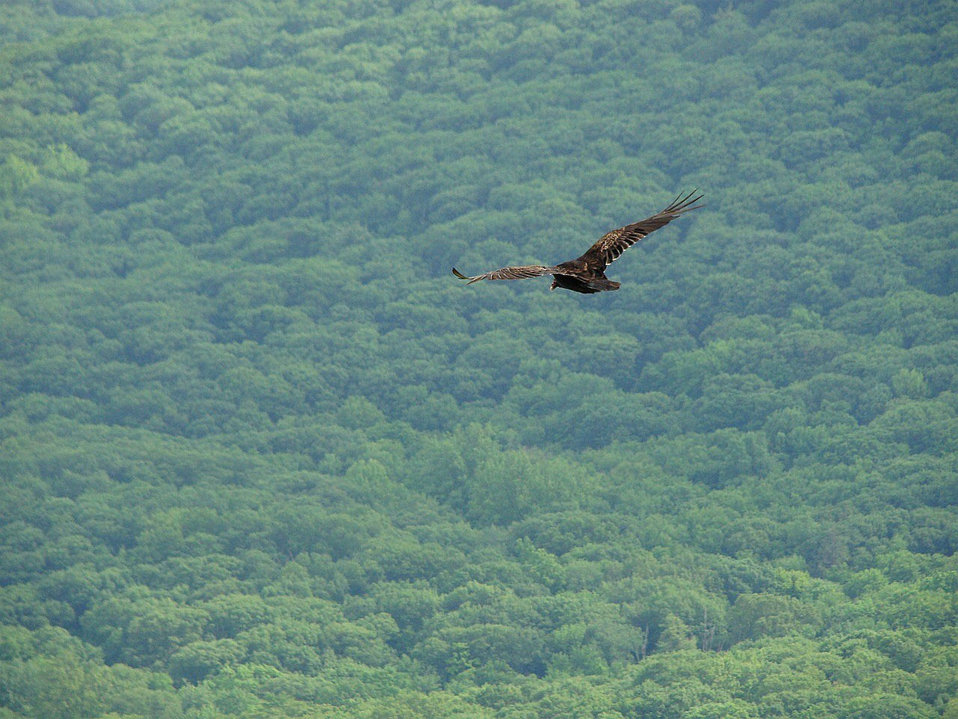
Bird of prey

Hawks flying around forest hill.